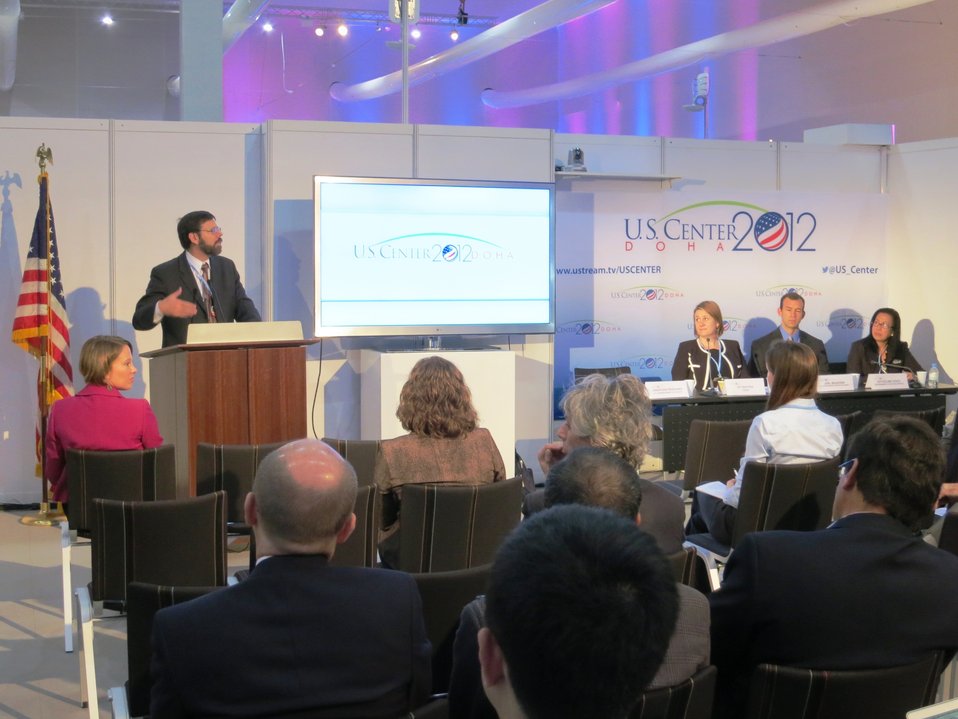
Deputy Special Envoy Pershing Addresses the Audience

Deputy Special Envoy for Climate Change Jonathan Pershing discusses Driving a Low Carbon Future: Enhancing Capacity for Low Emissions Development Strategies, at the U.S. Center at the 18th Session of the Conference of the Parties to the UN Framework Convention on Climate Change (COP-18) in Doha, Qatar, November 29, 2012.